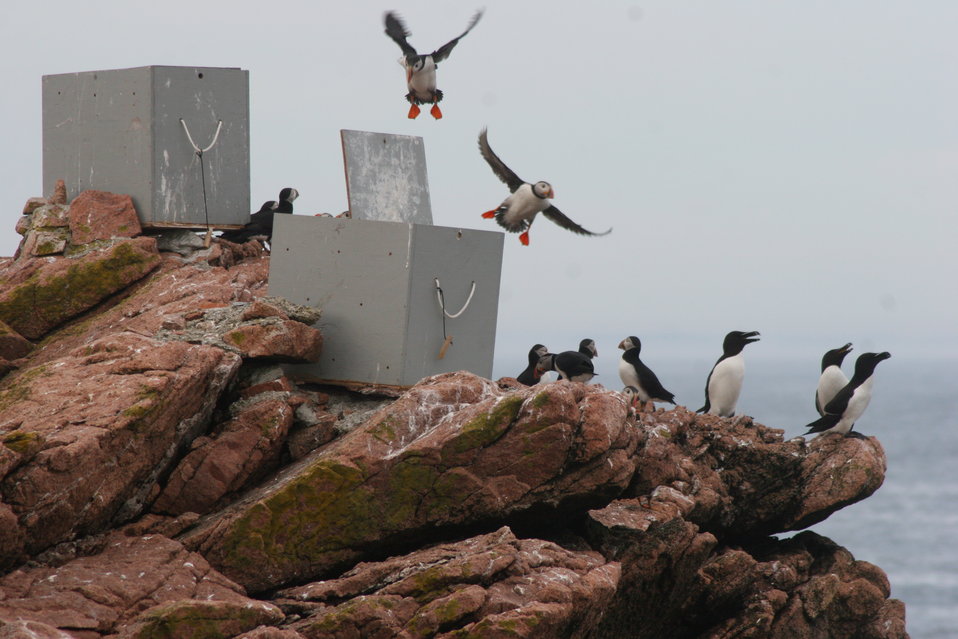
Puffins Flying Over Capture Boxes